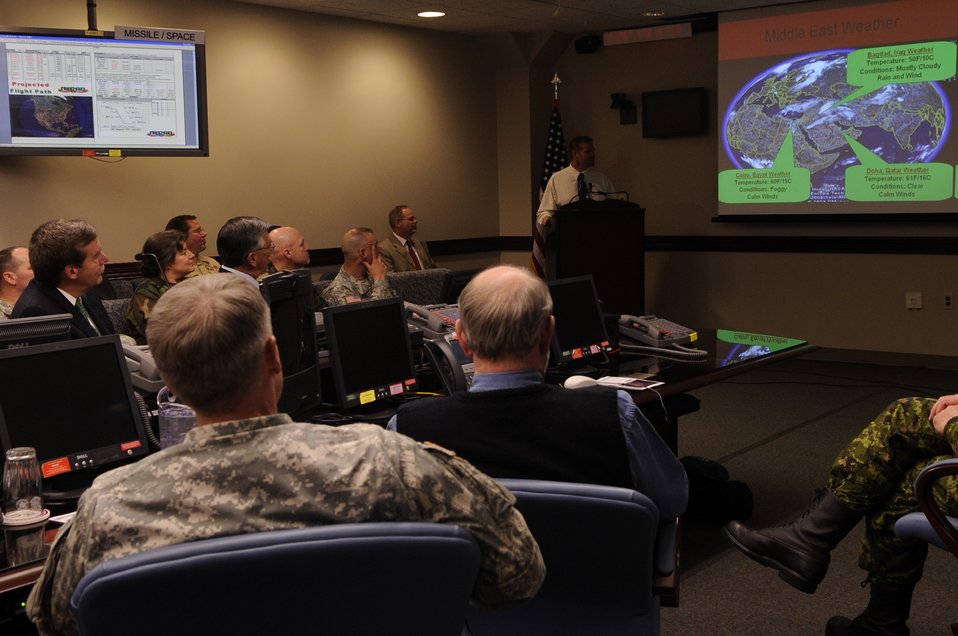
Santa Claus is coming to town

Santa Claus makes a surprise visit to the North American Aerospace Defense Command Tracks Santa Battle Cab Dec. 23 at Peterson Air Force Base, Colo. Santa received Federal Aviation Administration, weather and air mission briefs.